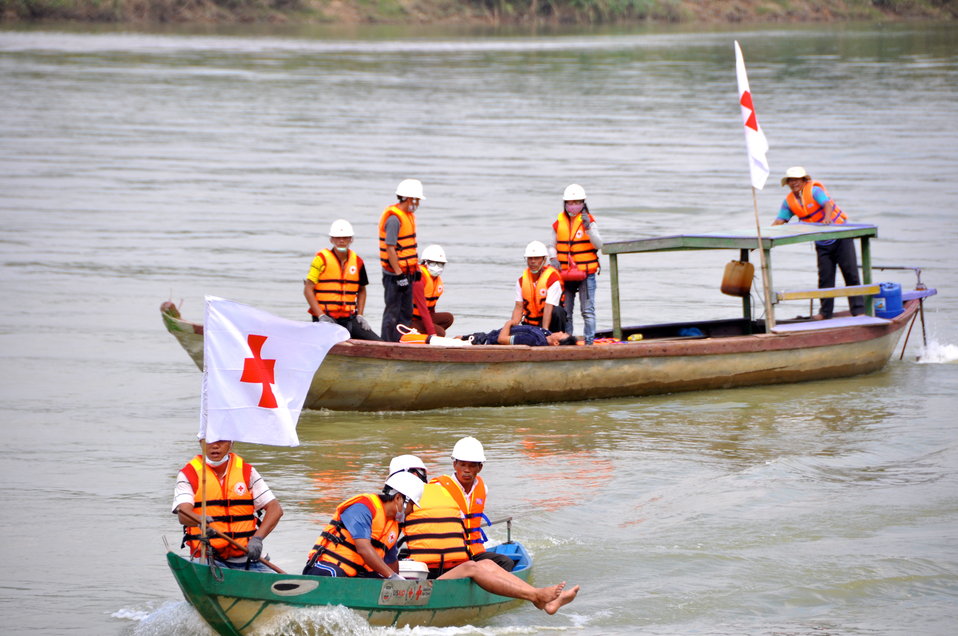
USAID, Red Cross Support Disaster Response Drill in Duy Hoa Commune, Quang Nam Province

Duy Hoa Commune, Quang Nam Province
December 5, 2012